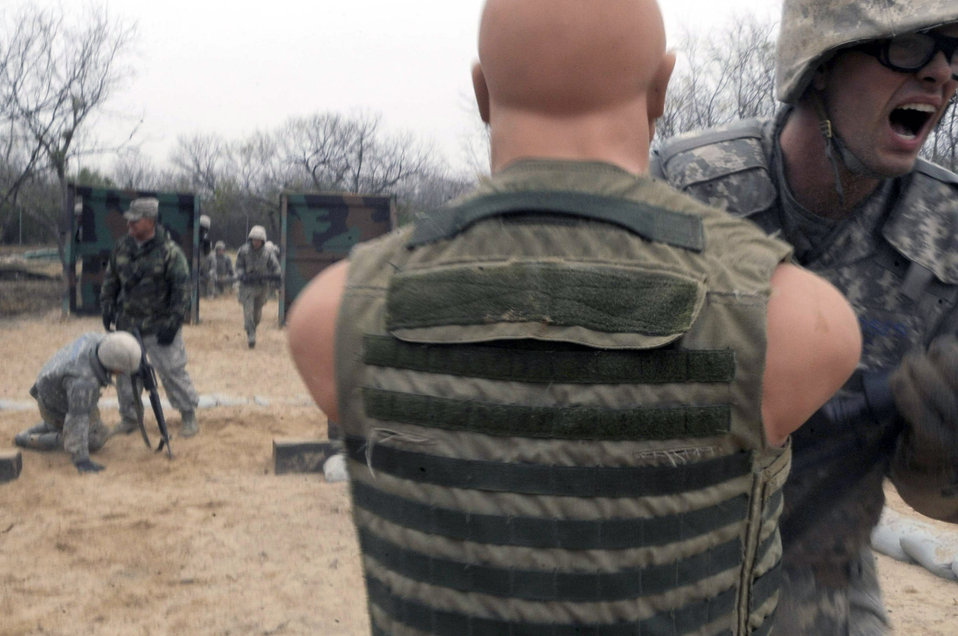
Trainees slew the BEAST in new basic training program

An Airman Basic trainee in body armor hits a strike-dummy as he makes his way through the tactical drill course during the five-day deployment exercise called the Basic Expeditionary Airman Skills and Training, or BEAST, which kicked off Dec. 15 at Lackland Air Force Base, Texas. The BEAST is the newly built complex added into the extended, 8.5-week Basic Military Training curriculum that began Nov. 5.